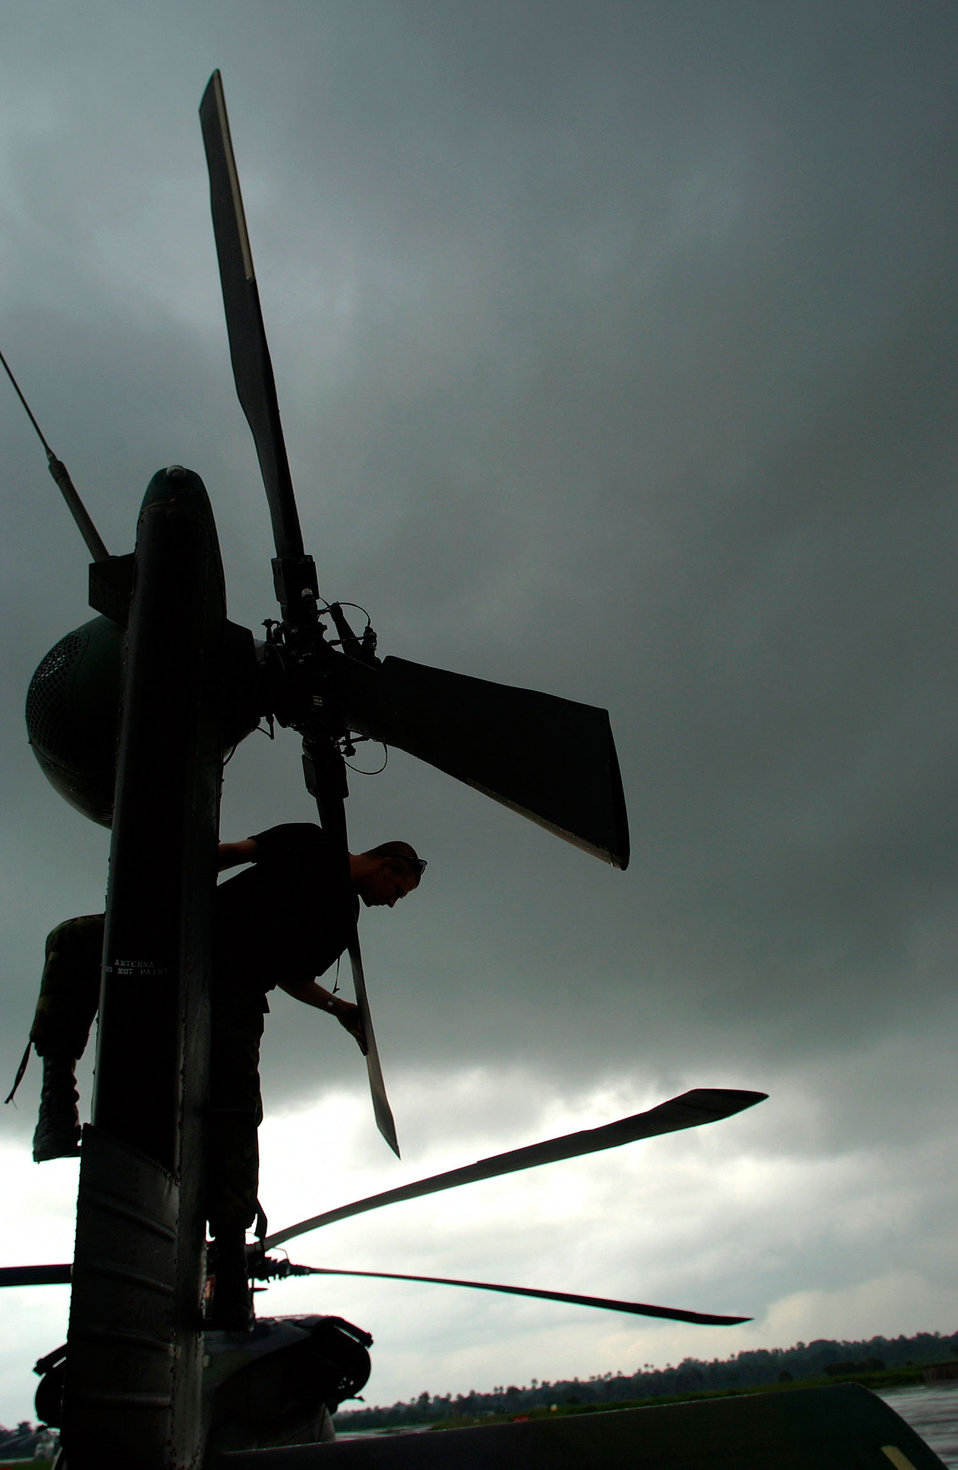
Working into the night

LUNGI, Sierra Leone -- Staff Sgt. Jason Krokos inspects an HH-60G Pave Hawk helicopter here. He is deployed from the 85th Maintenance Squadron from Naval Air Station Keflavik, Iceland. U.S. European Command officials sent troops here to provide personnel recovery and emergency evacuation capability for the humanitarian assistance survey team in Liberia.